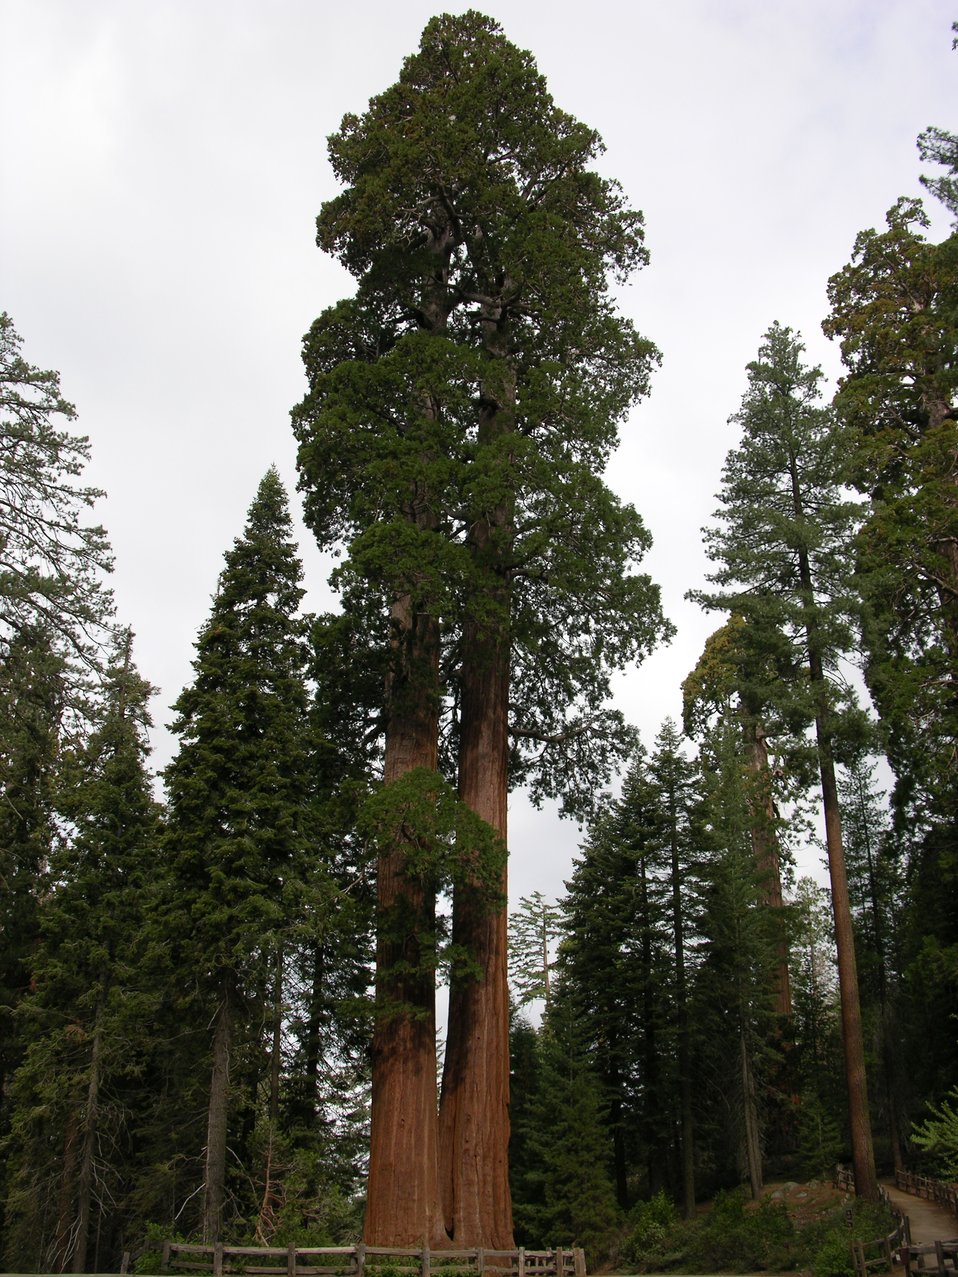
Two trees ? or one tree with two branches ? have been locked together for centuries.